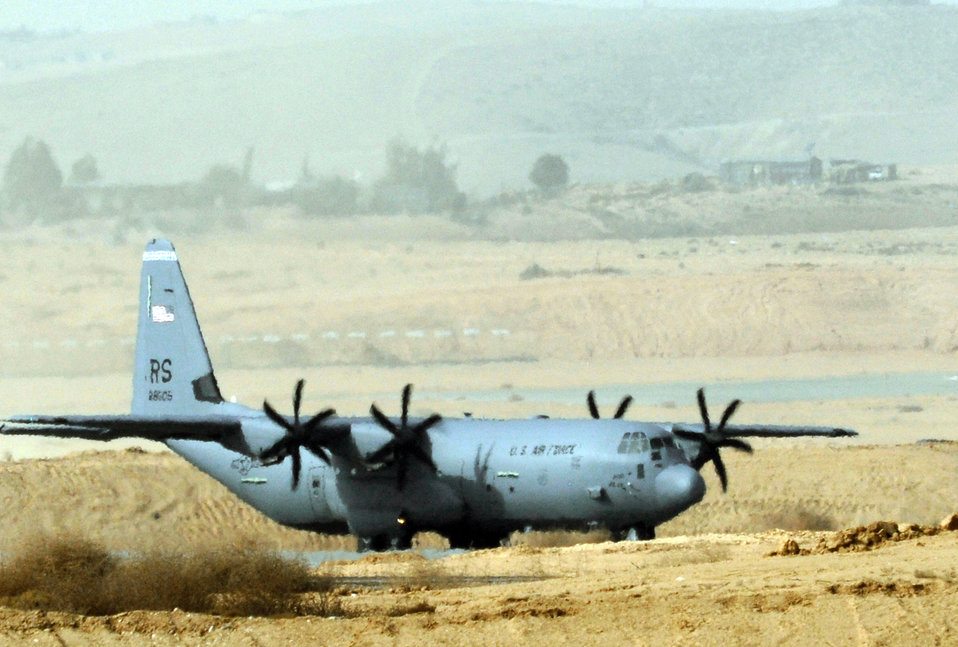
Ramstein Airmen train in Israel

A C-130J Super Hercules lands Dec. 6, 2009 at Nevatim Air Force Base, Israel. Ramstein Air Base Airmen participated in a 10-day training exercise to accomplish training requirements because of the strict air restrictions in Germany.